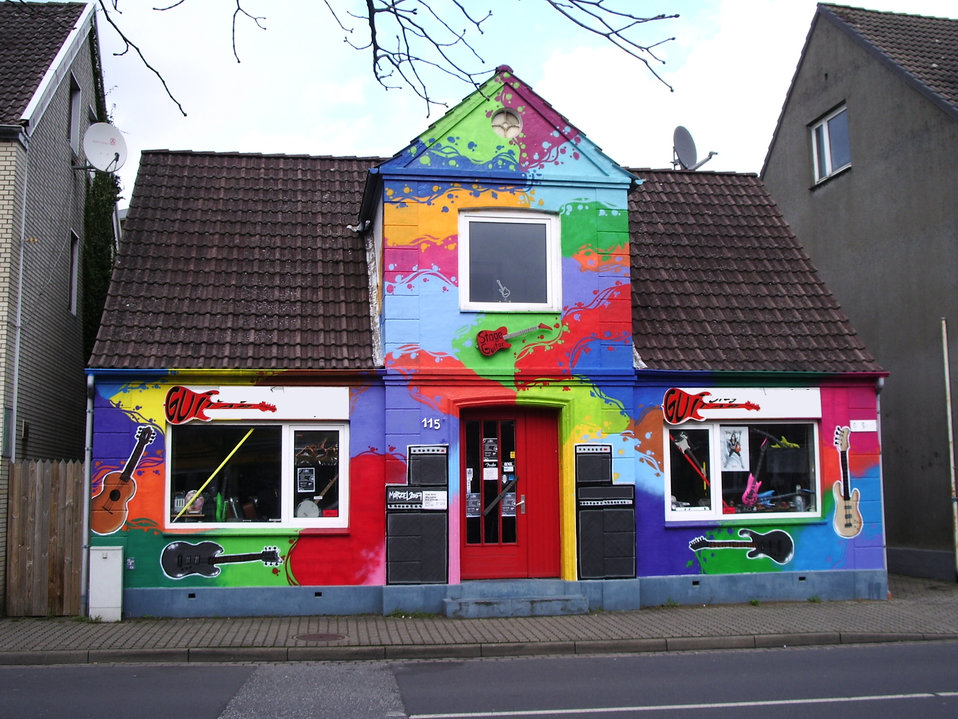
Deutsch: Der Gitarrenladen 'Stage Guitar' in Uetersen